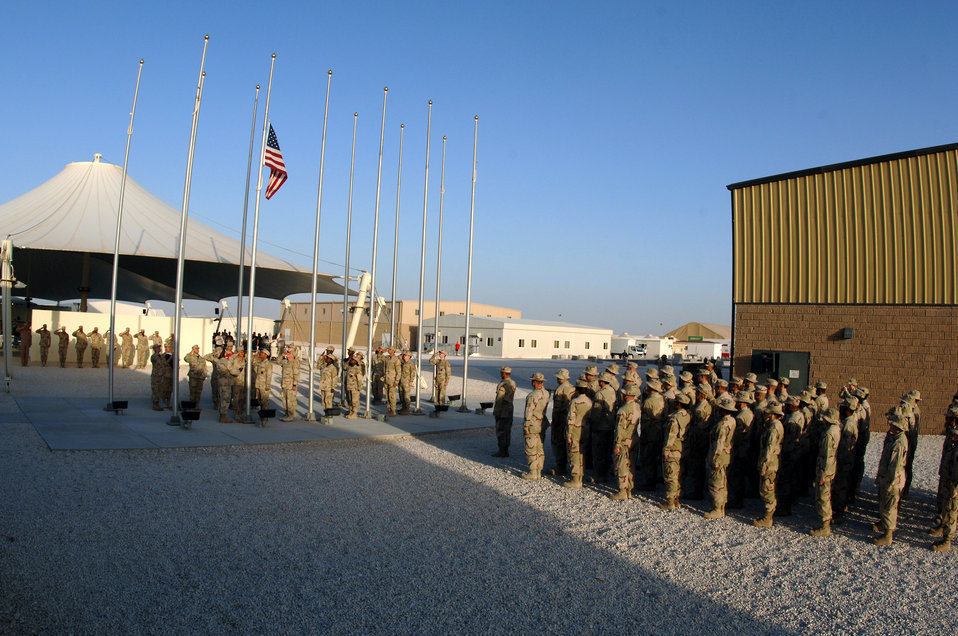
Desert honor guard

Airmen from the honor guard and the 379th Expeditionary Medical Group perform a retreat ceremony at a deployed location in Southwest Asia, Friday, March 24, 2006.